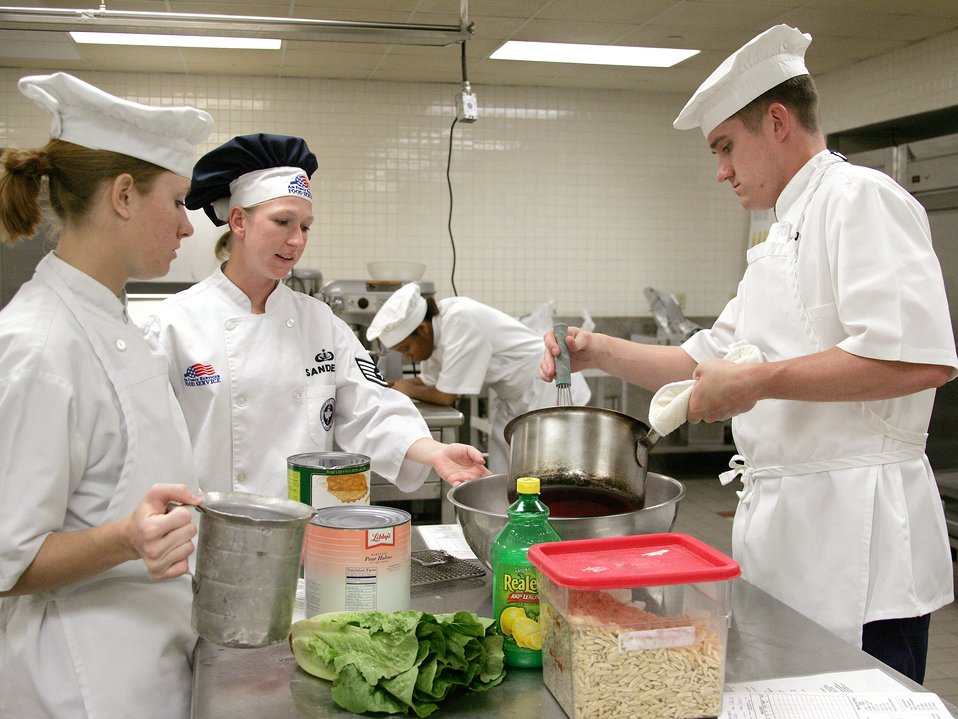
Culinary Arts

Staff Sgt. Felicia Sanders assists her students as they learn to prepare desserts at the Culinary Arts Training Center, Monday, March 13, 2006. Sergeant Sanders is a services instructor with the 344th Training Squadron at Lackland Air Force Base, Texas.